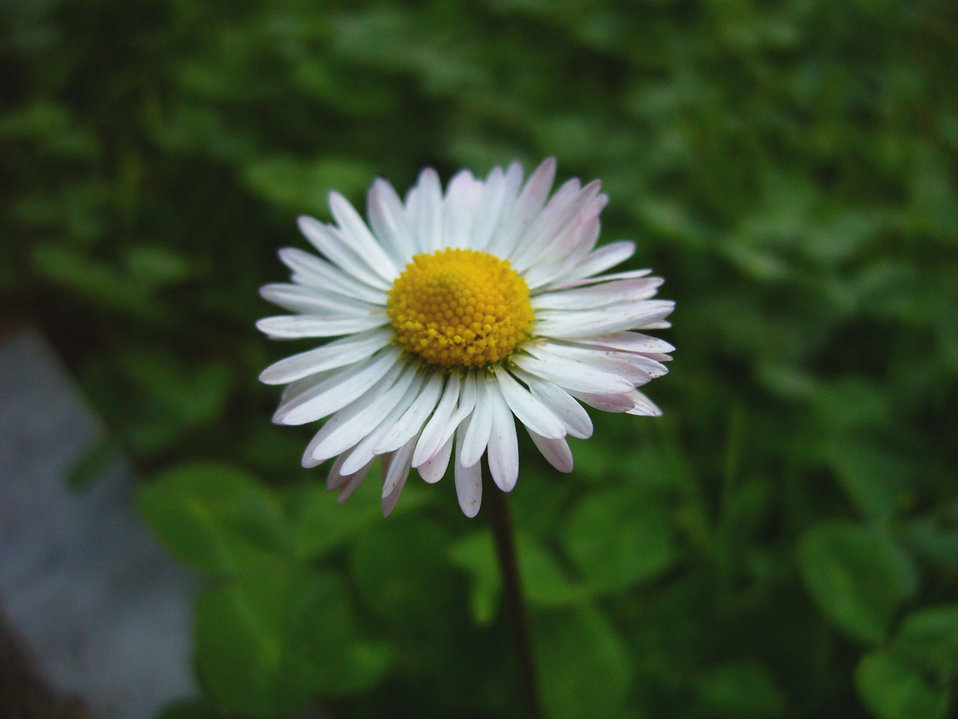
Daisy flower

Daisy white flower.